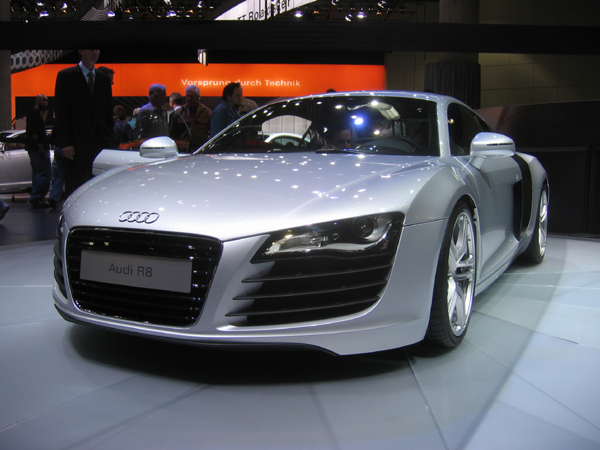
Audi R8 Photographed at the 2006 Los Angeles International Auto Show